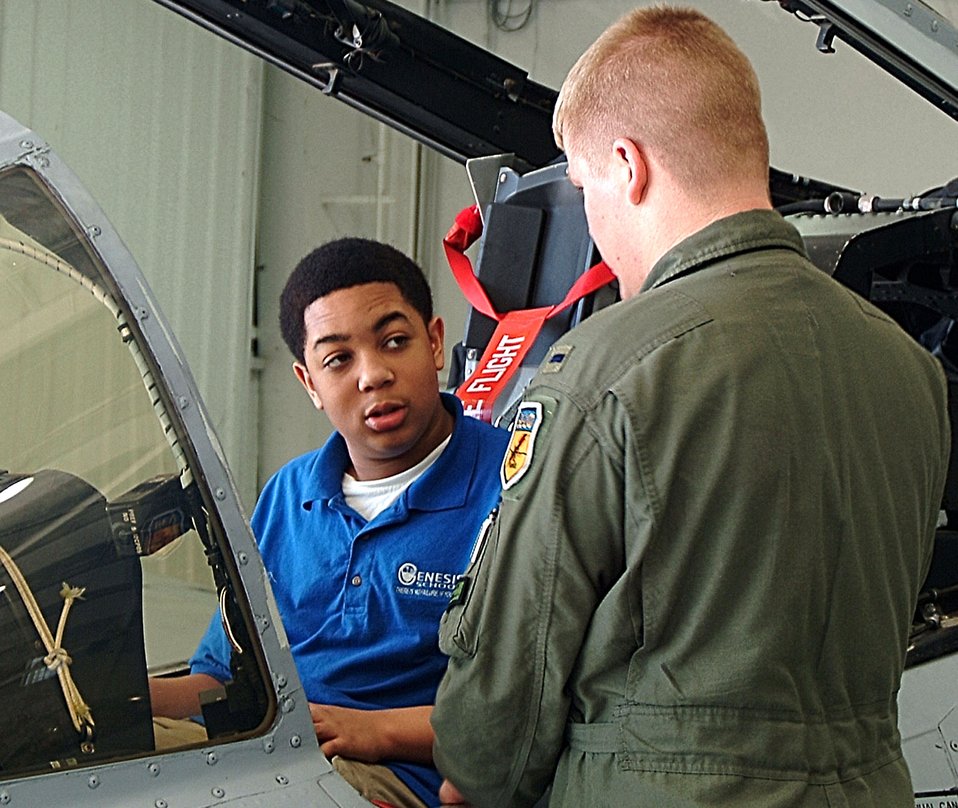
Wright Flight program takes youths to new heights

1st Lt. John Tice (right) answers questions about the A-10 Thunderbolt II from students from the Genesis School in Kansas City, Mo. Students from four area schools toured the A-10 and its facilities as a reward for successful completion of the wing-sponsored Wright Flight mentoring program. Lieutenant Tice is a pilot with the 442nd Fighter Wing's 303rd Fighter Squadron. The 442nd FW is an Air Force Reserve Command A-10 fighter unit based at Whiteman Air Force Base, Mo.